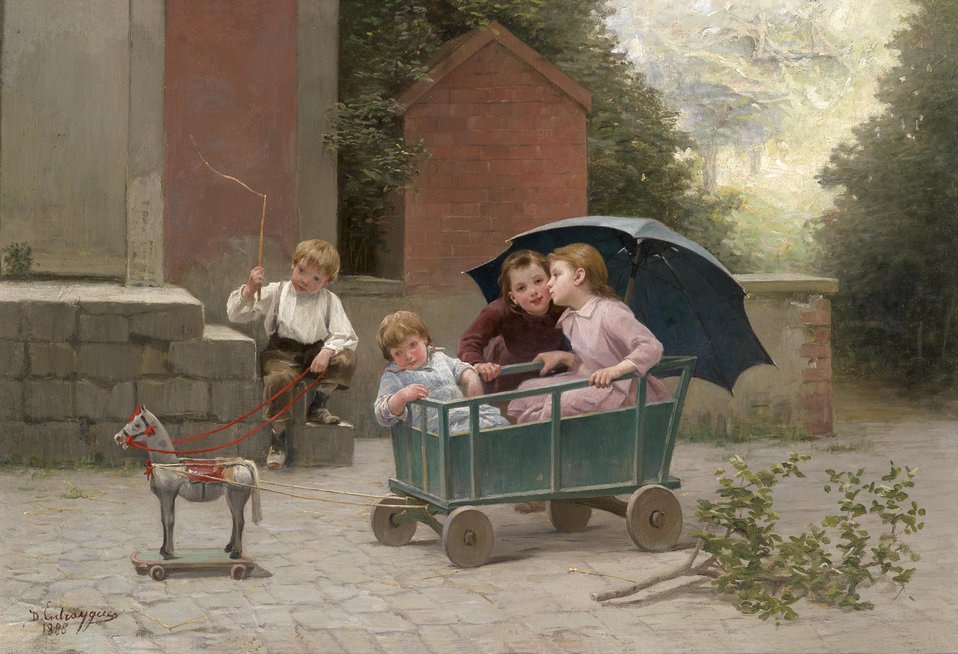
Das kleine Zugpferd, signiert, datiert D Entraygues 1888, Öl auf Leinwand, 38 x 55 cm